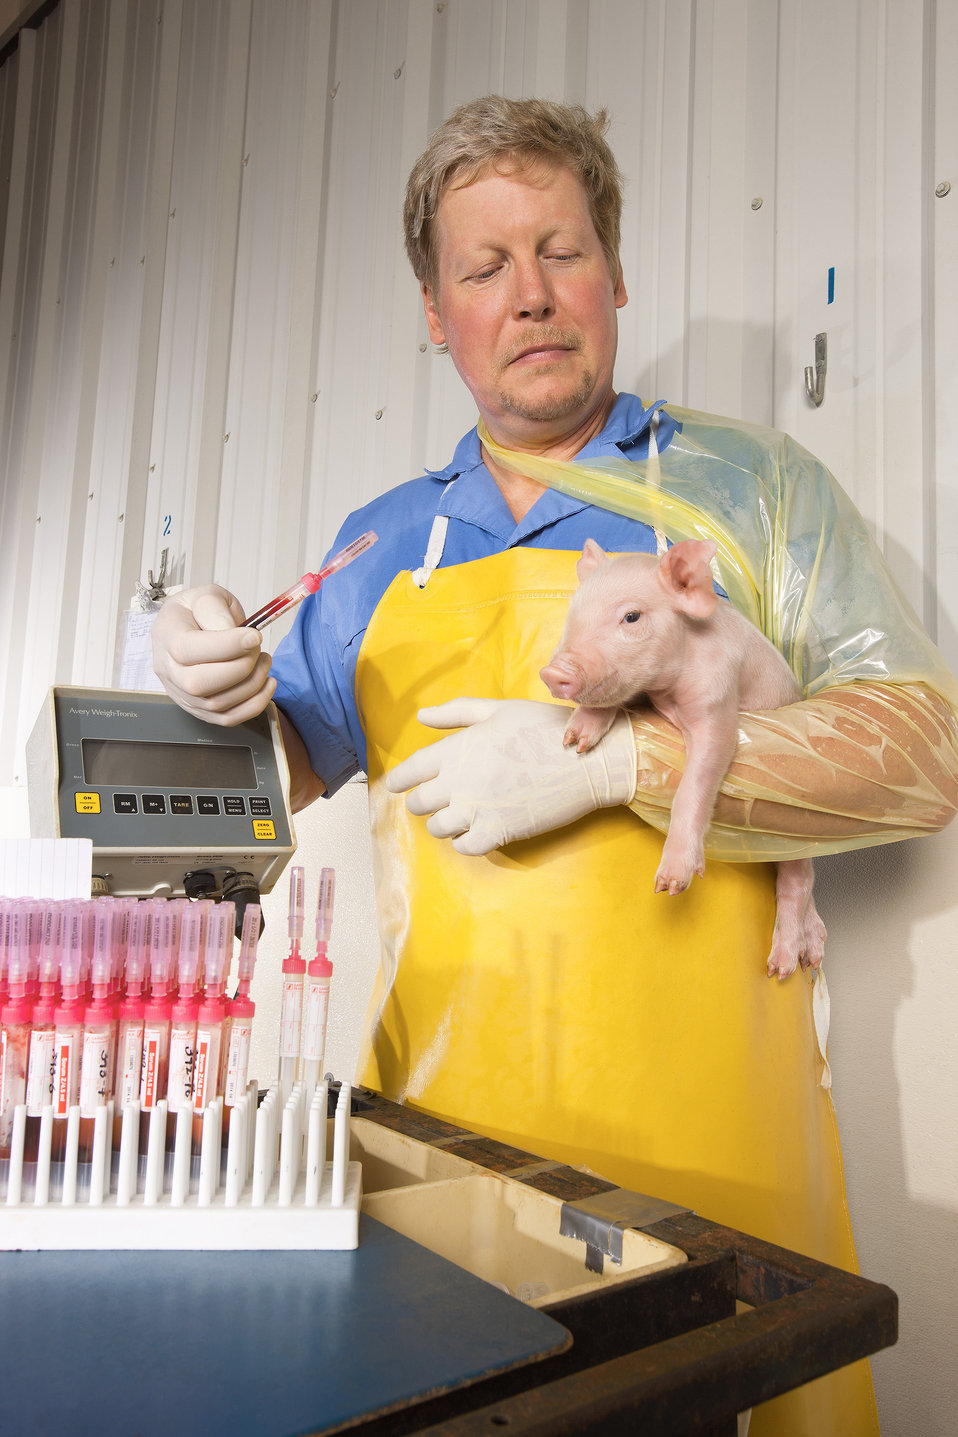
U.S. Department of Agriculture (USDA) Agricultural Research Service (ARS) physiologist Jeffrey Vallet collects a blood sample from a 1-day-old piglet on Nov. 1, 2003. The sample will be used to run a new immunoglobulin immunocrit technique that will tell whether the piglet received sufficient colostrum from its mother.